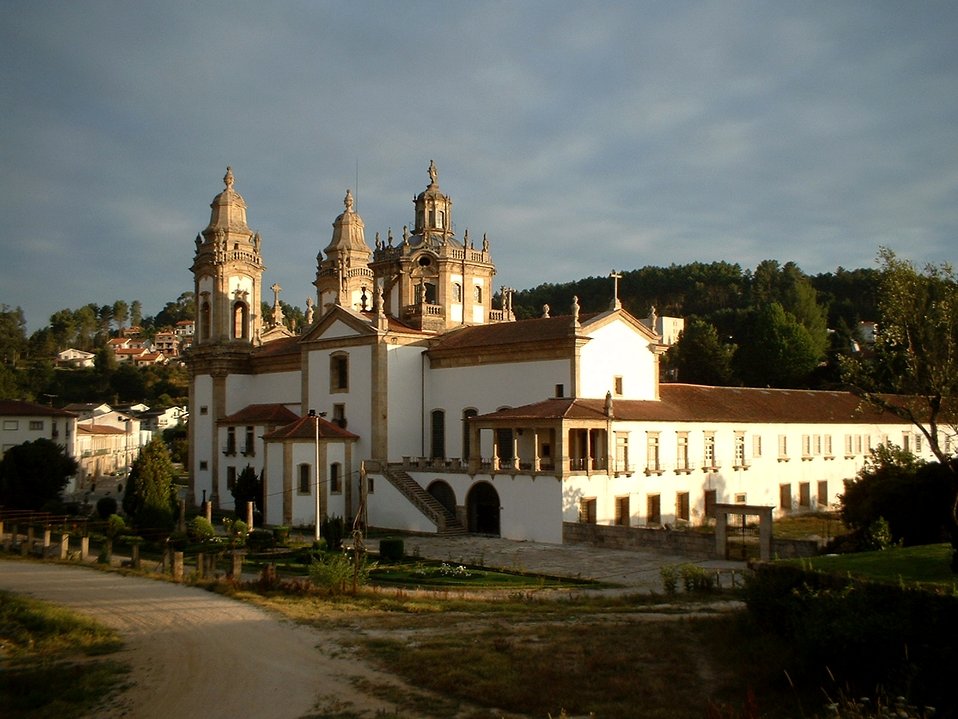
Esta imagem mostra o mosteiro de Sao Miguel de Refojos, em Cabeceiras de Basto e fui eu próprio quem tirou esta fotografia com a minha máquina Fujifilm. Devo dizer que já cedi esta mesma foto gratuitamente ao jornal Diário do minho que já a publicou mais que uma vez nas suas ediçoes. Francisco Miguel Rodrigues Descrição: vista alteral da igreja do Mosteiro de Sao Miguel de Refojos, em Cabeceiras de Basto Fonte e créditos: (Máquina fujifilm de Francisco Miguel Rodrigues)